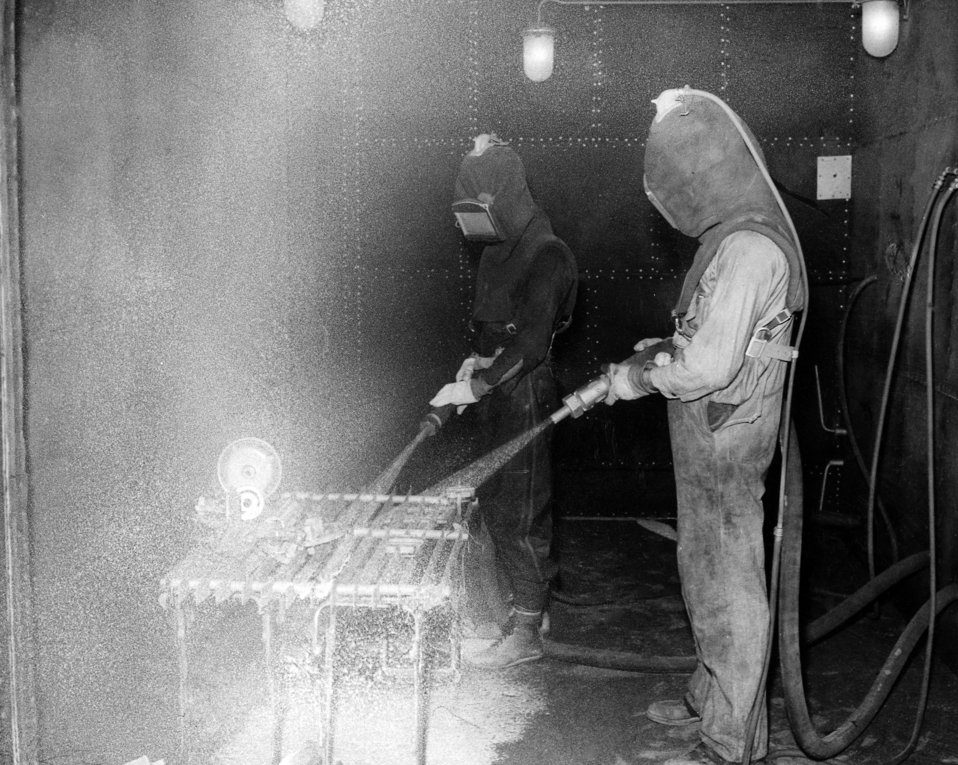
This historic image, provided by the Center for Disease Control's (CDC), National Institute for Occupational Safety and Health (NIOSH), depicted two industrial workers who were in the process of sand-blasting a number of unidentifiable parts on a metal rack, while each was wearing an air-fed hood over their heads, as well as gloves and coveralls, Wearing the headgear allowed the men to avoid breathing airborn particules, and therefore, avoid potential long-term lung damage.In gaining a better understanding of workplace hazards, through hands-on and on-site information acquisition, protocol-formulating bodies such as NIOSH, are better able to create a safer workplace through substantiation of appropriate safety regulations.